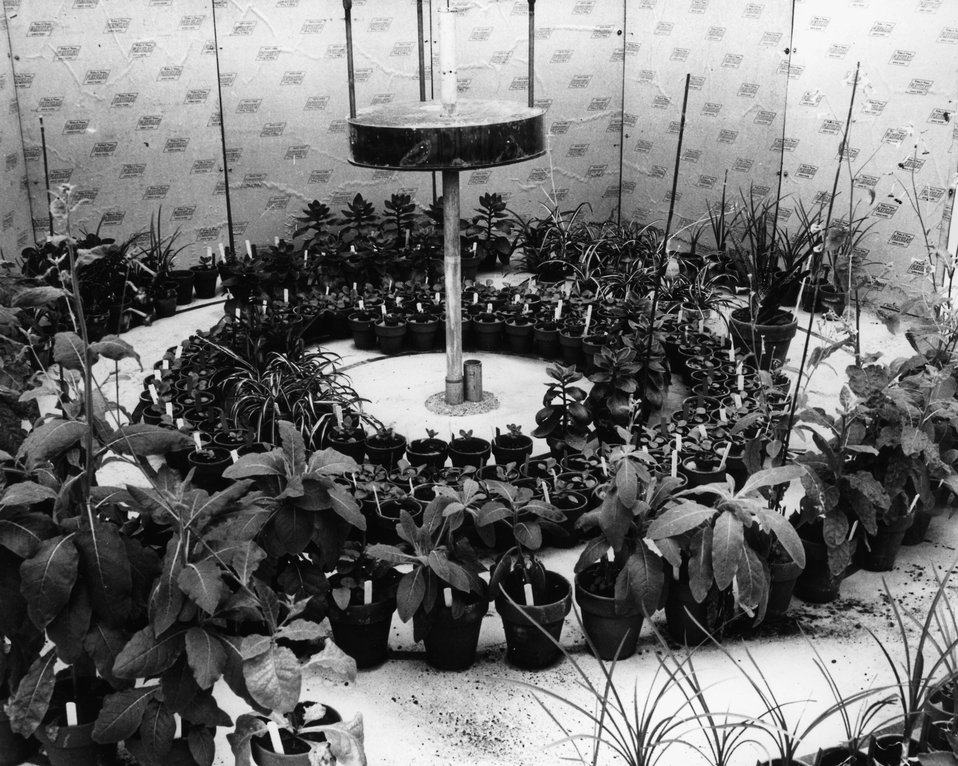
Plants growing in the gamma greenhouse at Brookhaven National Laboratory. The plants are arranged in concentric rings around the radioactive Cobalt 60 source, which is in the pipe extending into the floor. c. 1959